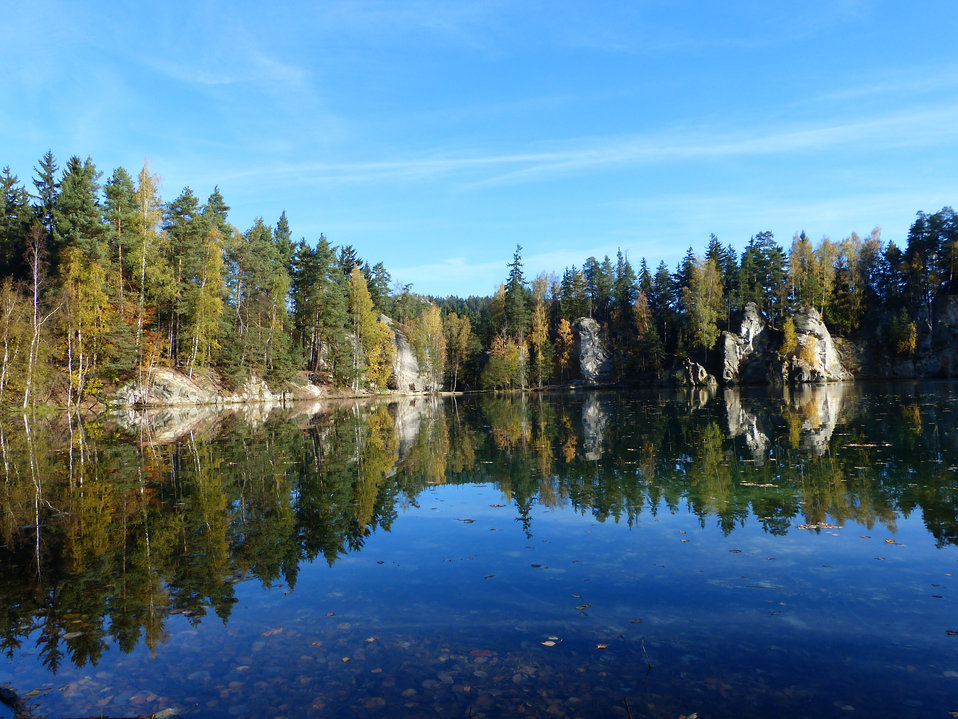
Lake in adrspach.